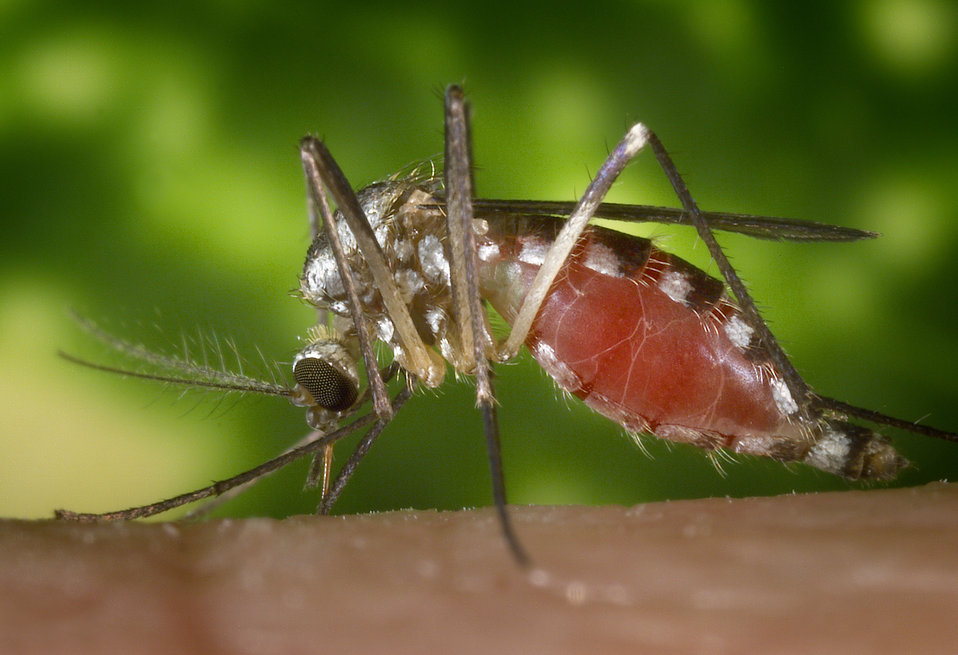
An Ochlerotatus triseriatus mosquito feeding on a human hand.